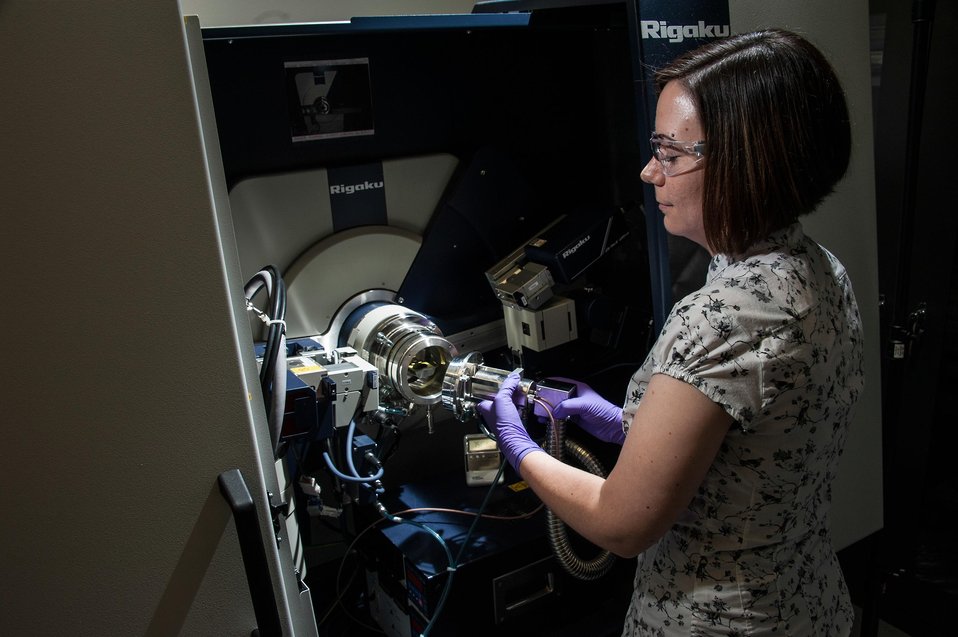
A POST DOCTORAL STUDENT AT SAVANNAH RIVER NATIONAL LABORATORY WORKS ON STRUCTURAL CHARACTERIZATION OF MATERIALS USING X-RAYS IN THE CHARACTERIZATION LAB.